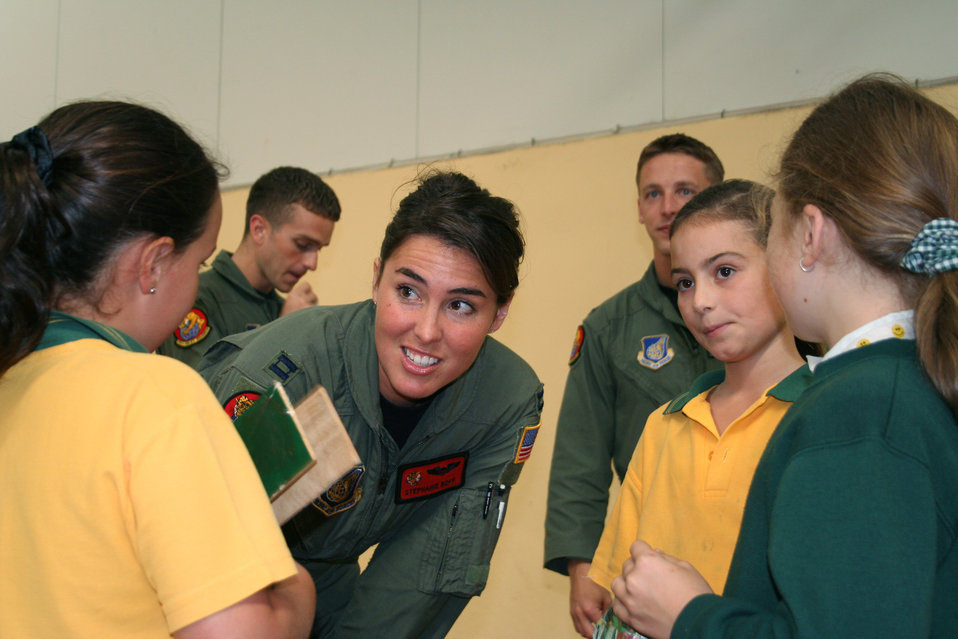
Airmen visit Australian primary school

Capt. Stephanie Boff answers students' questions about being an Air Force pilot March 22 at the Lara Primary School in Victoria, Australia. Pacific Air Forces Airmen are in Australia supporting Australian International Airshow 2007. Captain Boff is a pilot with the 535th Airlift Squadron at Hickam Air Force Base, Hawaii.